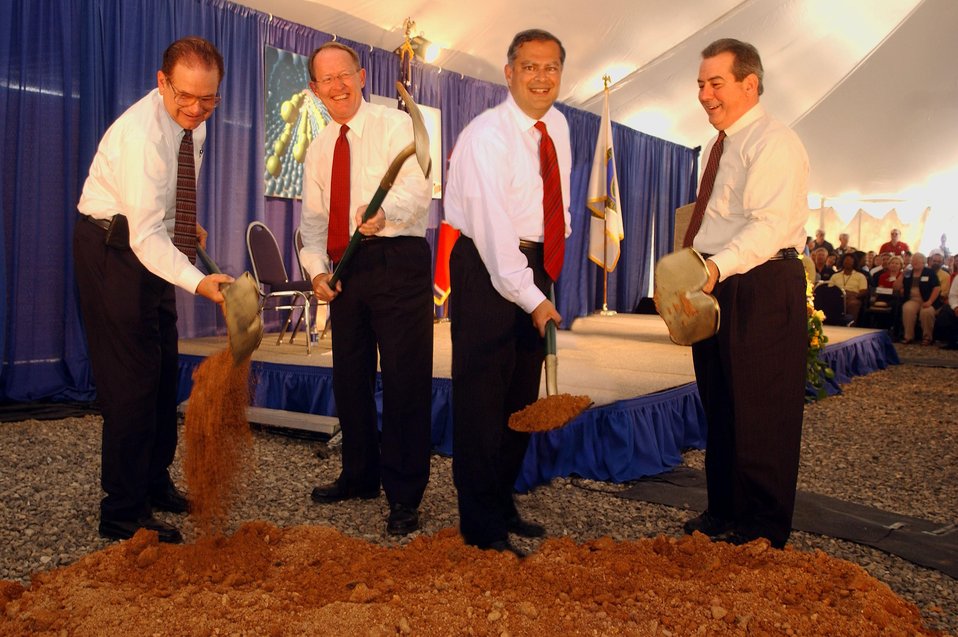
SECRETARY ABRAHAM PARTICIPATES IN BREAKING GROUND FOR THE CENTER OF NANOPHASE MATERIALS SCIENCES AT OAK RIDGE NATIONAL LABORATORY.

DR. RAYMOND ORBACH, DIRECTOR, DOE'S OFFICE OF SCIENCE, SENATOR LAMAR ALEXANDER, SECRETARY OF ENERGY SPENCER ABRAHAM AND ORNL DIRECTOR WILLIAM MADIA AT THE GROUNDBREAKING CEREMONY, JULY, 2003 FOR THE NANOSCIENCE CENTER AT ORNL. THIS IS THE FIRST OF FIVE DOE OFFICE OF SCIENCE NANOSCALE RESEARCH CENTERS TO BE BUILT. THE OTHERS WILL BE LOCATED AT ARGONNE, BROOKHAVEN, LAWRENCE BERKELEY, AND SANDIA/LOS ALAMOS, FORMING AN INTEGRATED NATIONAL NETWORK OF HIGHLY COLLABORATIVE USER RESEARCH FACILITIES.